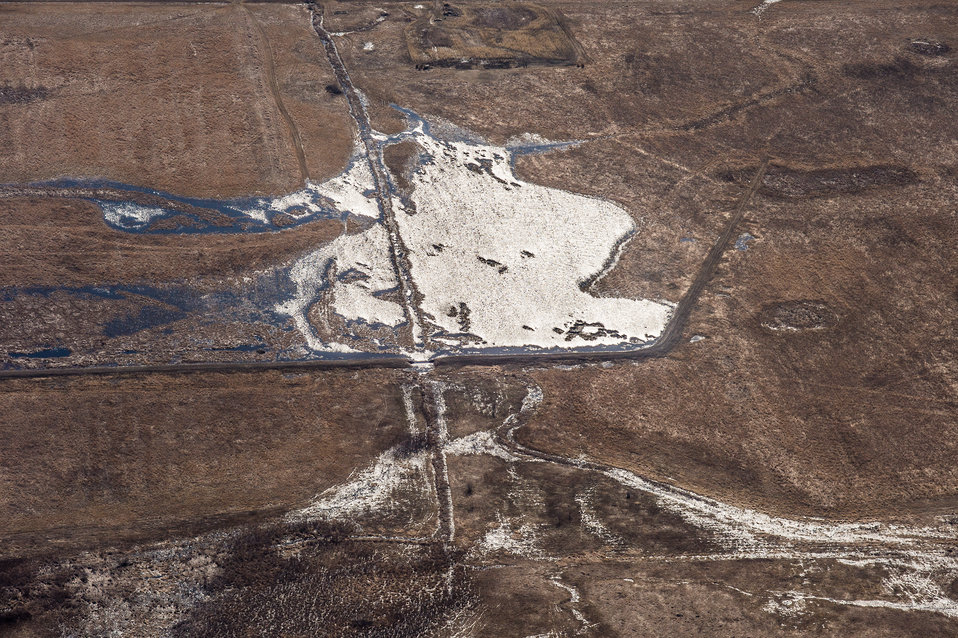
Ehlert North U.S. Department of Agriculture (USDA) Natural Resources Conservation Service (NRCS) Wetland Reserve Program (WRP) in Wilkin County, MN, on Tuesday, April 30, 2013. For information about this and other programs from the USDA Red River Basin Initiative (RRBI) please see www.mn.nrcs.usda.gov/news/features13/RRBI.html.